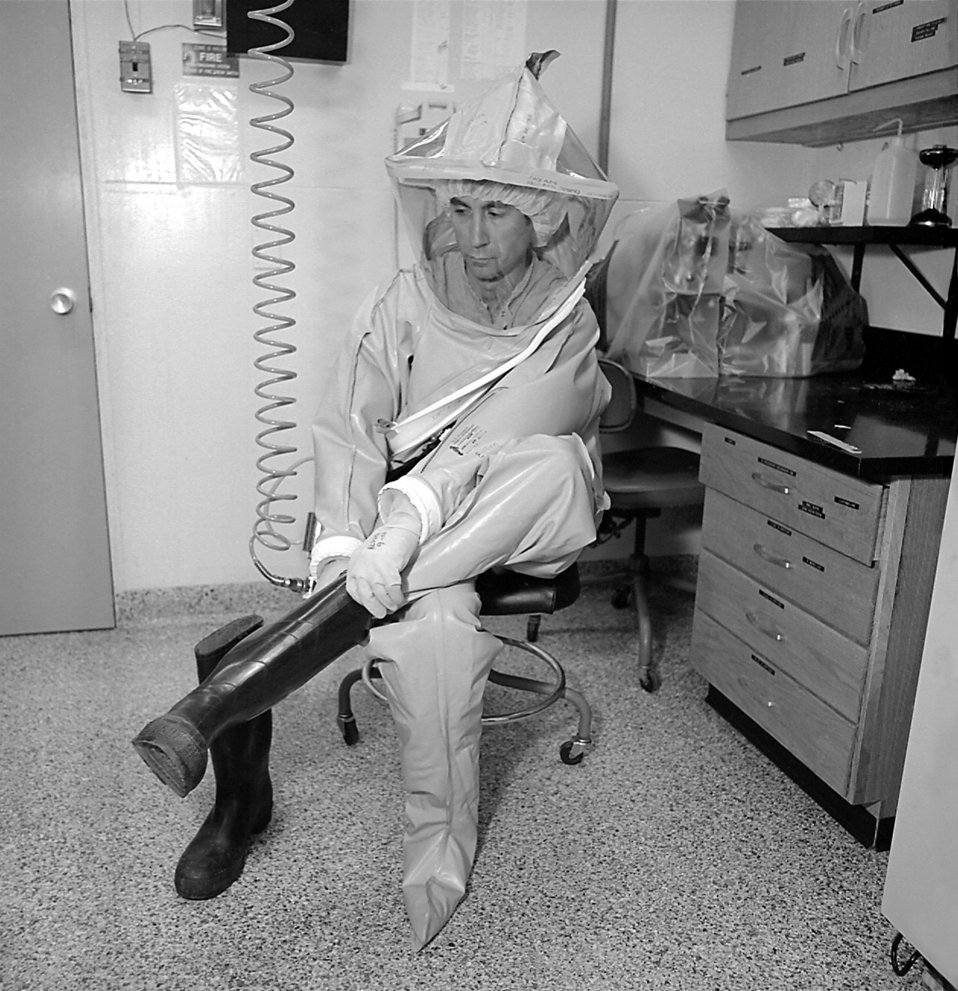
A CDC scientist puts on a protective suit prior to entering a BSL-4 containment laboratory.